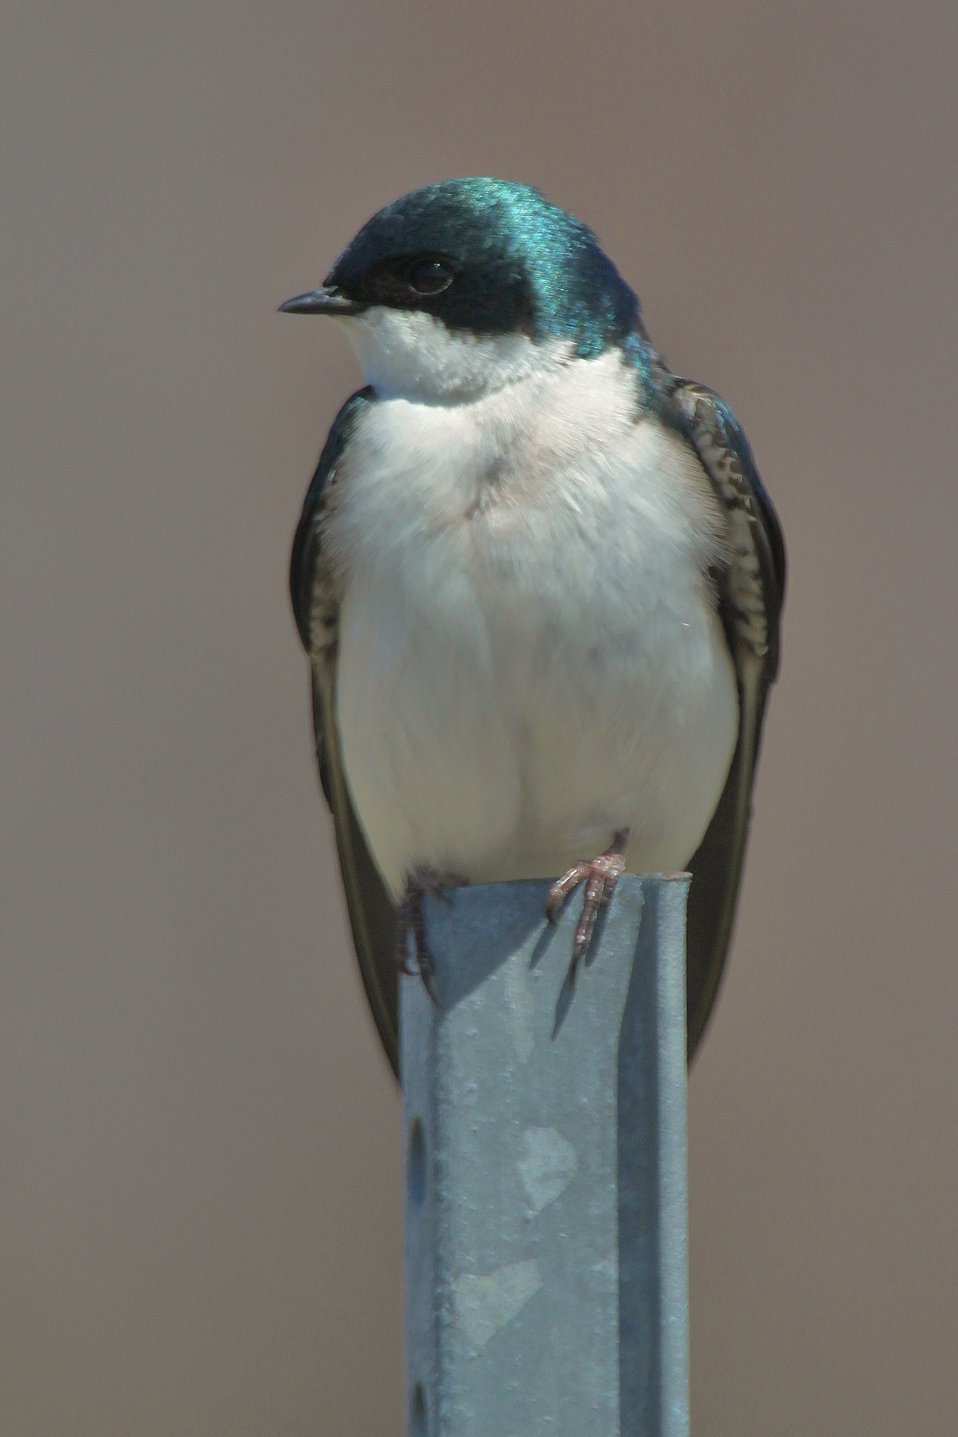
Tree swallow at Missisquoi National Wildlife Refuge